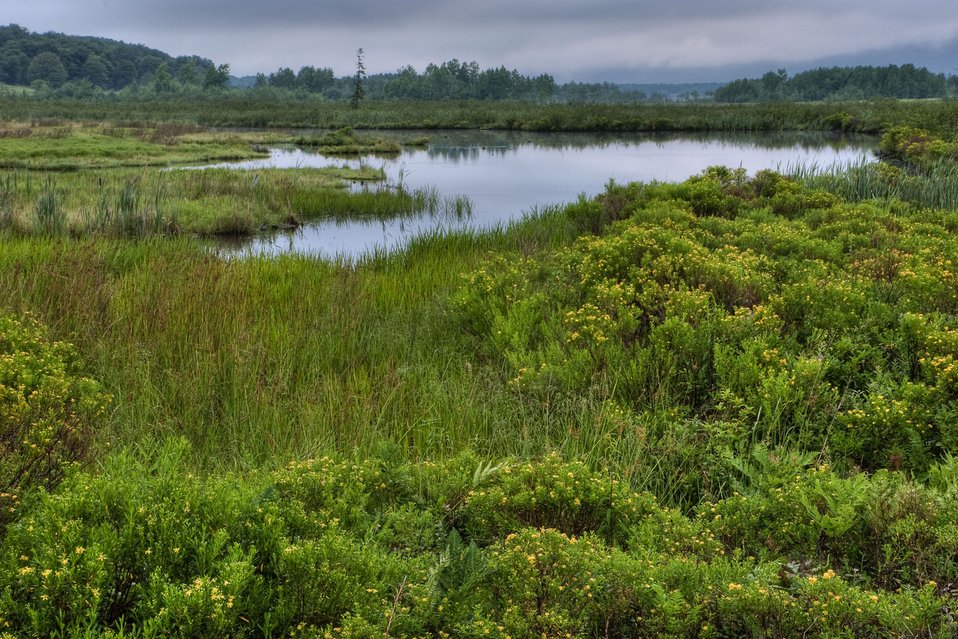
Camp 71 Beaver Pond, Canaan Valley Refuge

West Virginia.